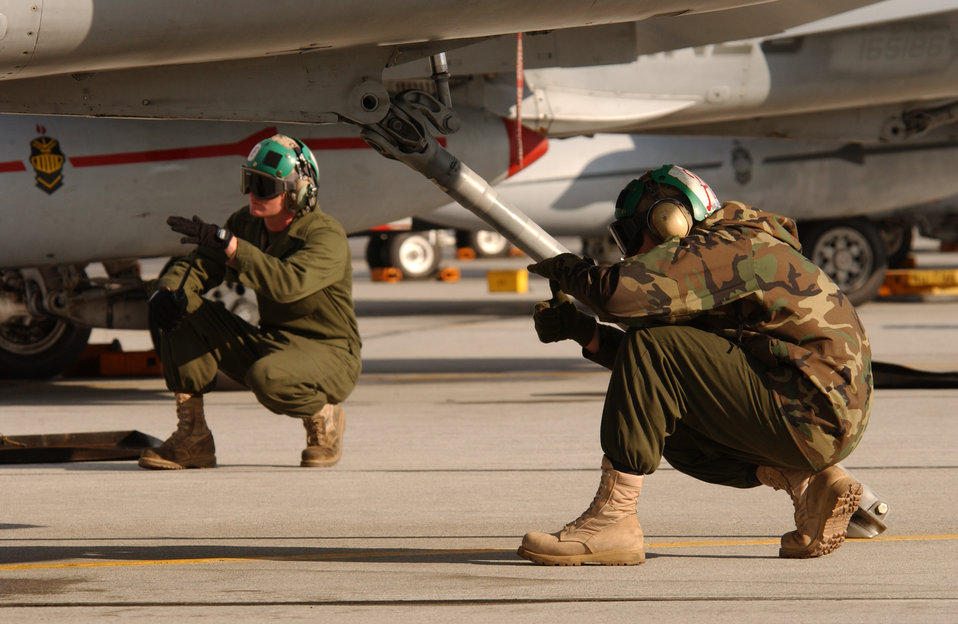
Northern Edge aims for air, sea dominance

Two Marines from the 1st Marine Aircraft Wing in Okinawa use hand signals during an F/A-18 Hornet launch at Eielson Air Force Base, Alaska, on Tuesday, June 6, 2006, during exercise Northern Edge 2006. The joint training exercise hosted by Alaskan Command is one of a series of U.S. Pacific Command exercises that prepare joint forces to respond to crises in the Asian Pacific region.